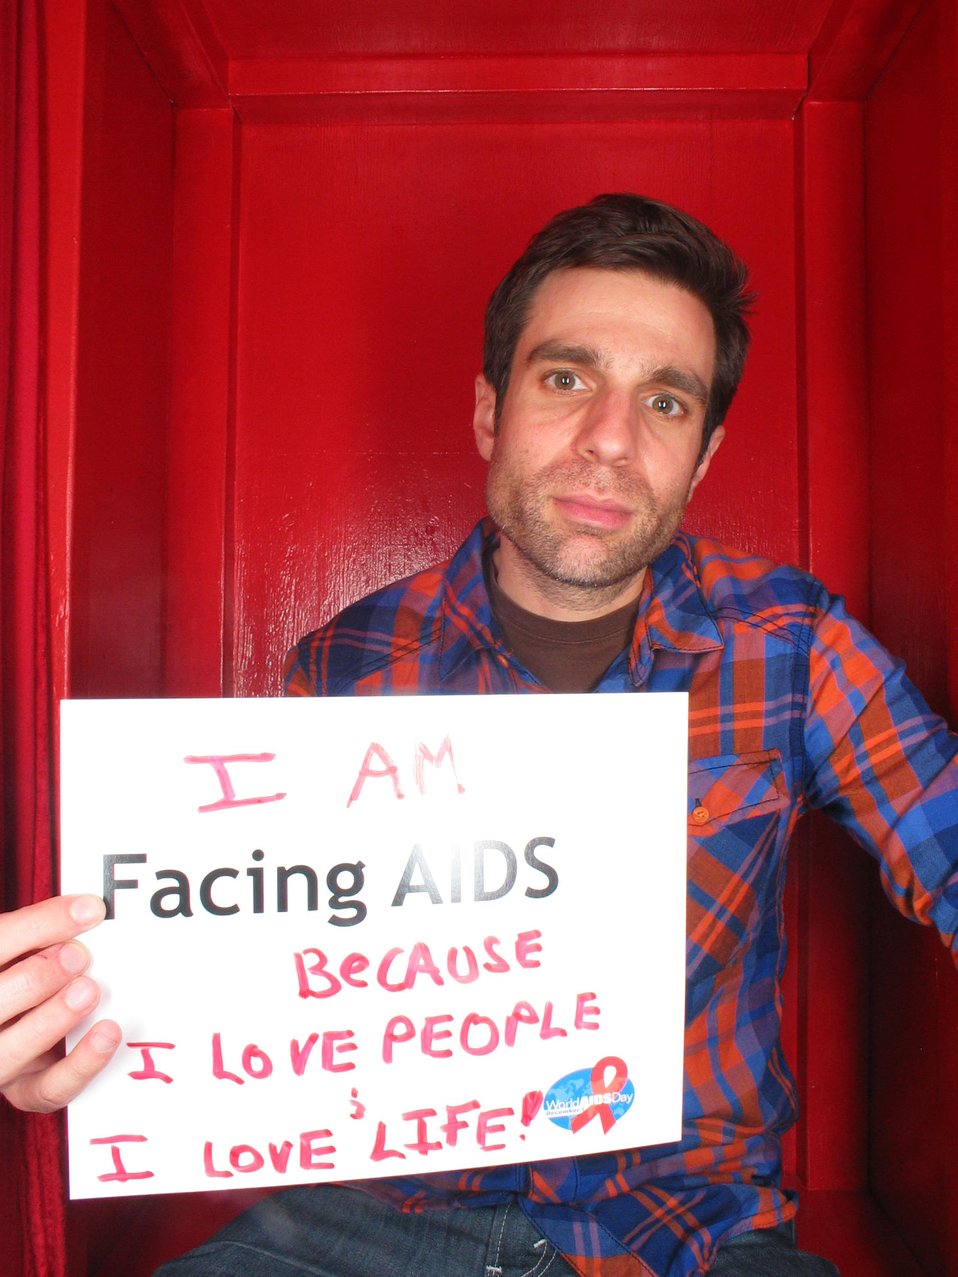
I am Facing AIDS because I love people and love life.